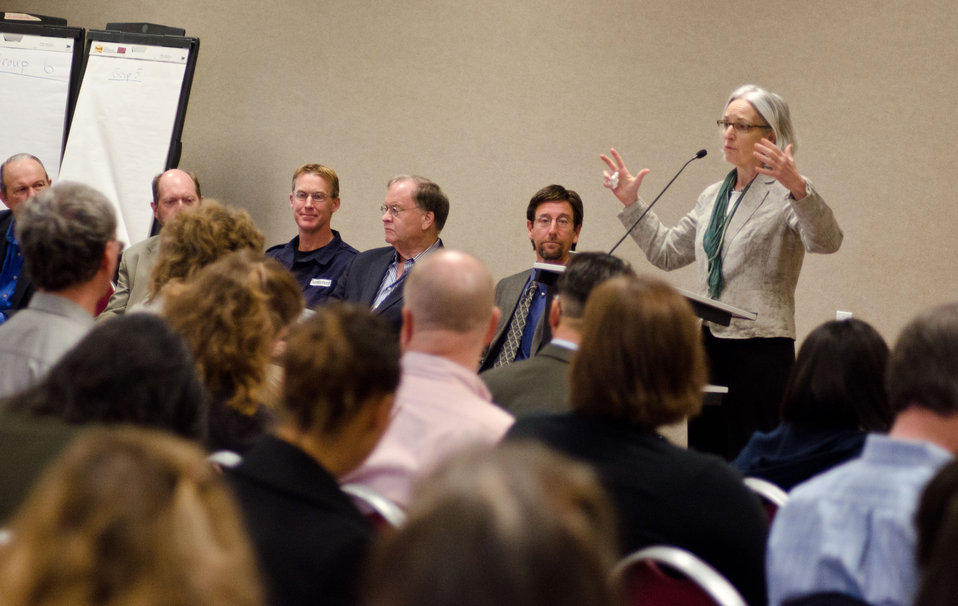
U.S. Department of Agriculture (USDA) Deputy Undersecretary for Natural Resources and Environment Ann Mills talked about how big this opportunity is and the range of positive impacts that the work done on this day can have, during her opening comments at the America’s Great Outdoors Initiative (AGO) Monterey Bay Pilot Area Focus Session in the City of Watsonville’s Civic Plaza in California, on Friday, June 17, 2011. Federal and state resource management agencies came together to identify partnership opportunities and determine actions for protection and enhancement of water quality and publicize voluntary stewardship in the watersheds that drain into the Monterey Bay National Marine Sanctuary. This area includes the counties of San Mateo, Santa Cruz, Santa Clara, San Benito, Monterey, and San Luis Obispo. Key questions identified existing multi-county or multi land use partnerships; what is not being done; possible partnerships - collective resources to maximize the benefits to natural resources and communities; and additional resources that organizations can bring to maximize AGO. President Barack Obama signed the initiative on April 16, 2010 to develop a 21st Century conservation and recreation agenda.